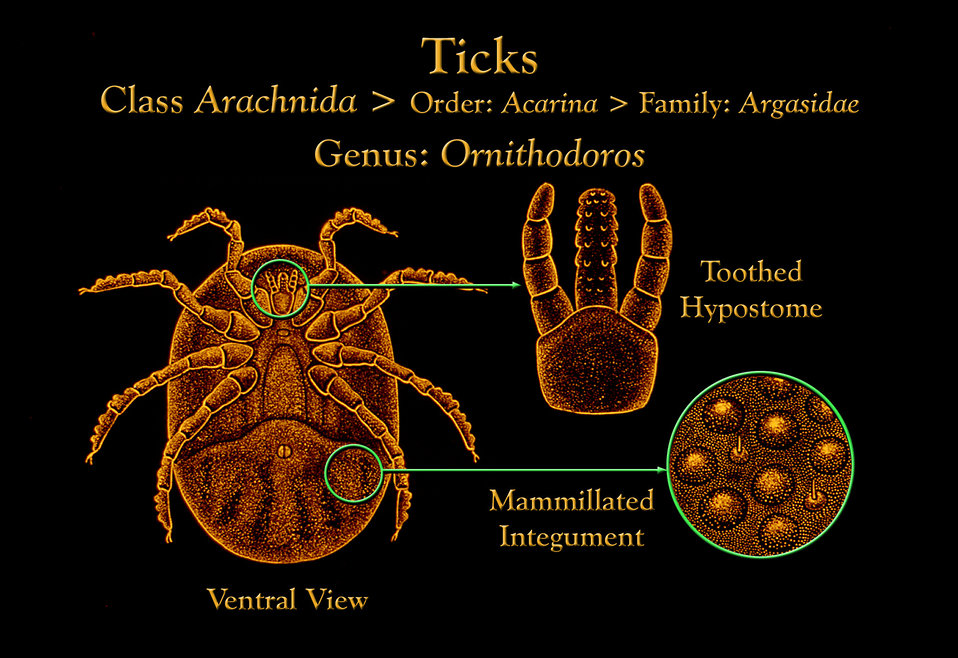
This illustration shows an Ornithodoros soft tick from the ventral view with its toothed hypostome and mammillated integument.